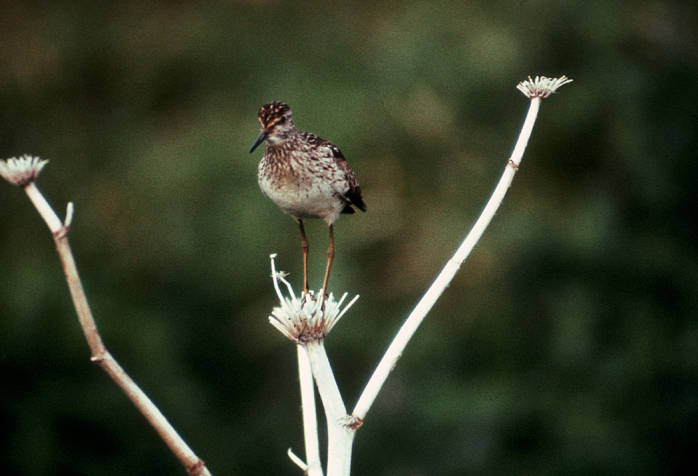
wood sandpiper

Alaska Maritime National Wildlife Refuge